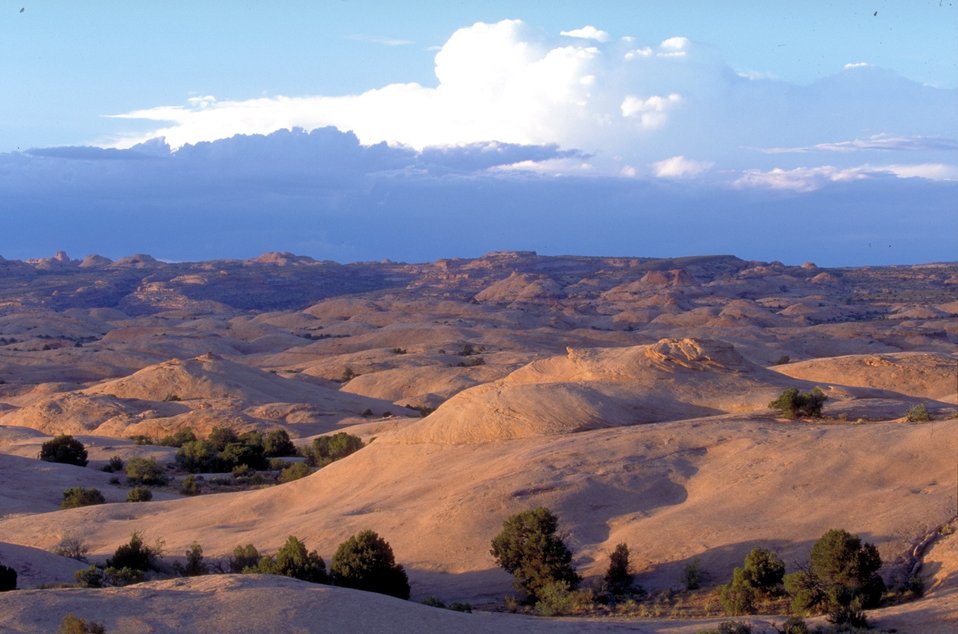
Moab Slickrock Bike Trail near Moab, Utah.